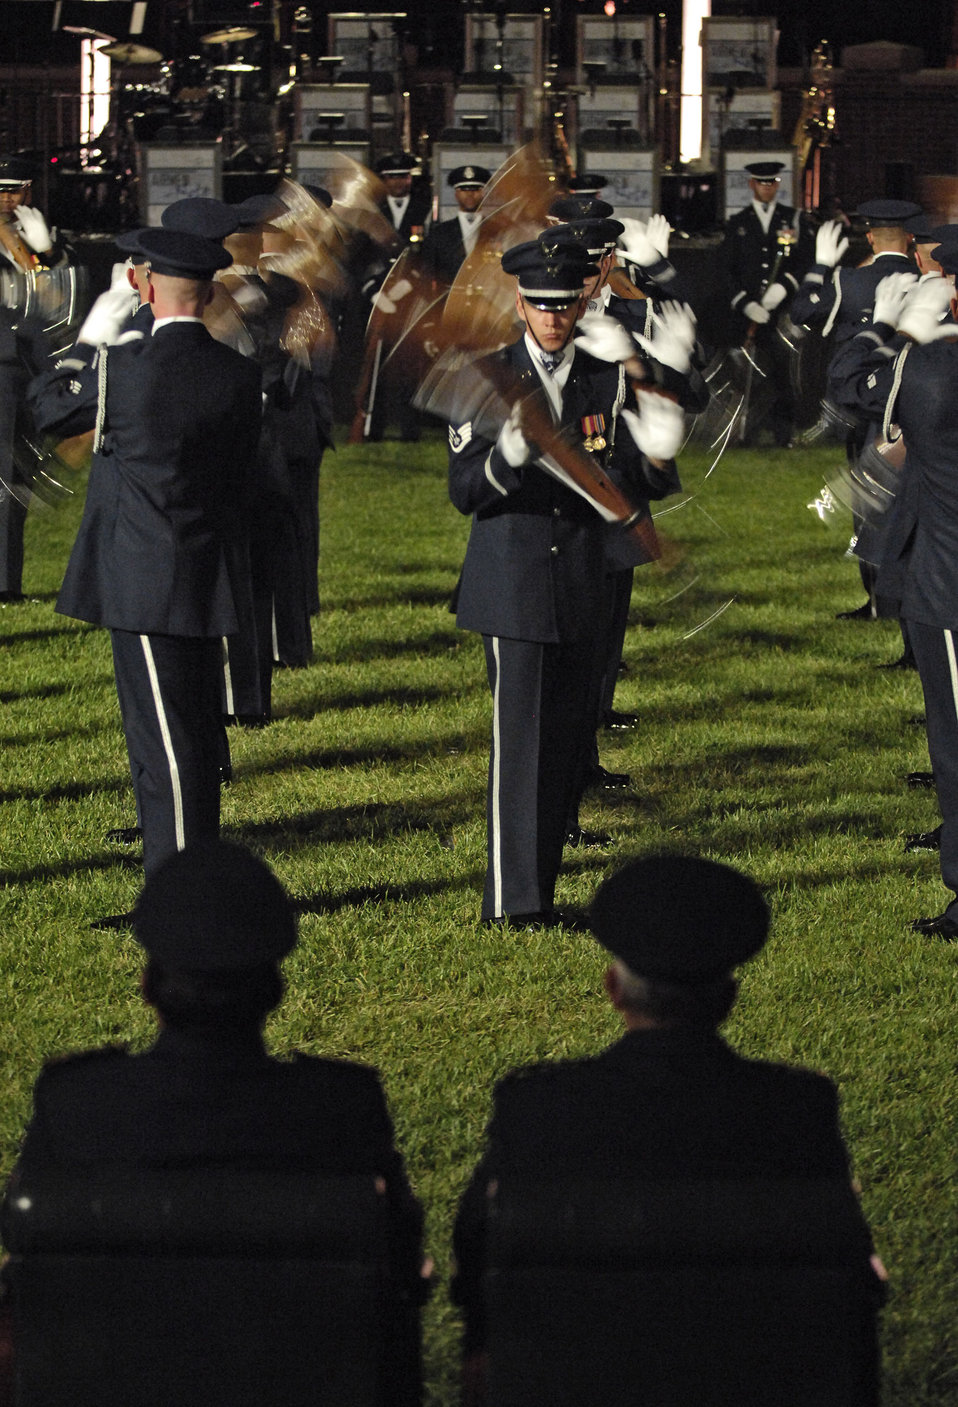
Air Force Tattoo

Members of the Air Force Honor Guard's Drill Team perform during the 2007 Air Force Tattoo Sept. 23 at Bolling Air Force Base, D.C. The 2007 Air Force Tattoo, titled